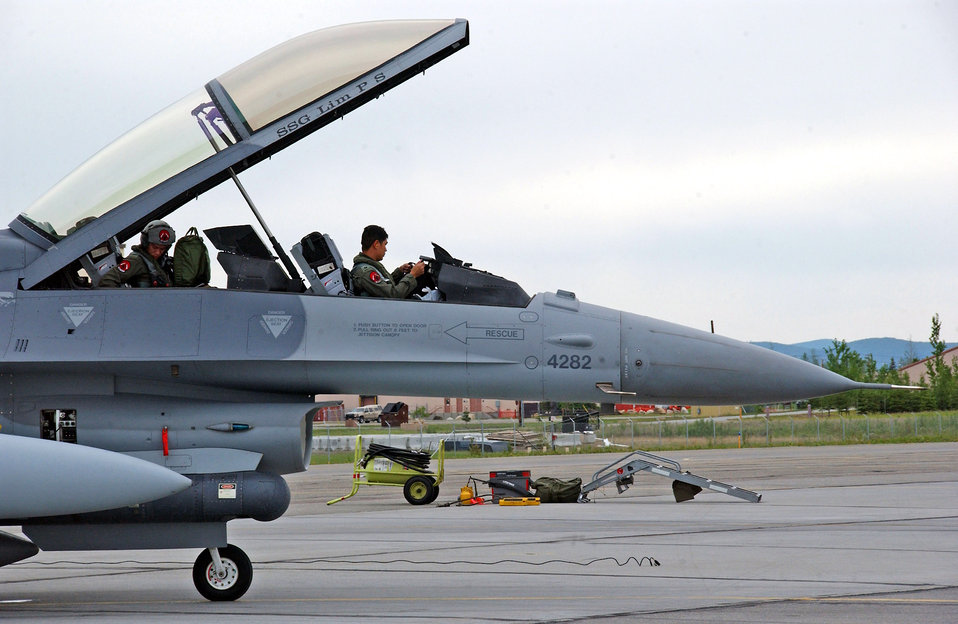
Joint forces combine for Red Flag-Alaska exercise

Republic of Singapore Air Force pilots from the 425th Fighter Squadron complete post-flight checks after landing at Eielson Air Force Base, Alaska, May 30 for Red Flag-Alaska 07-2. The 425th FS's mission is to provide advanced weapons and tactics continuation training for Republic of Singapore F-16 pilots and maintenance personnel. They are located at Luke Air Force Base, Ariz.